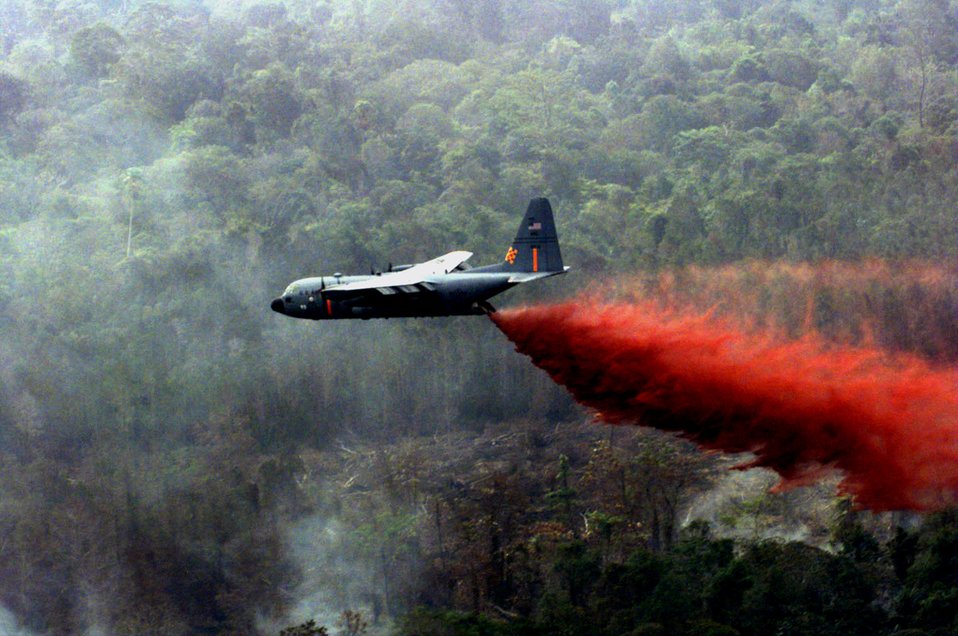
Reservists ready to fight wildfires in Pacific Northwest

Air Force Reserve aircrews and maintainers stand ready to fight wildfires using C-130 Hercules equipped with modular airborne firefighting systems, similar to this one. The aircraft can drop up to 3000 gallons of retardant covering an area one-quarter of a mile long and 60 feet wide.